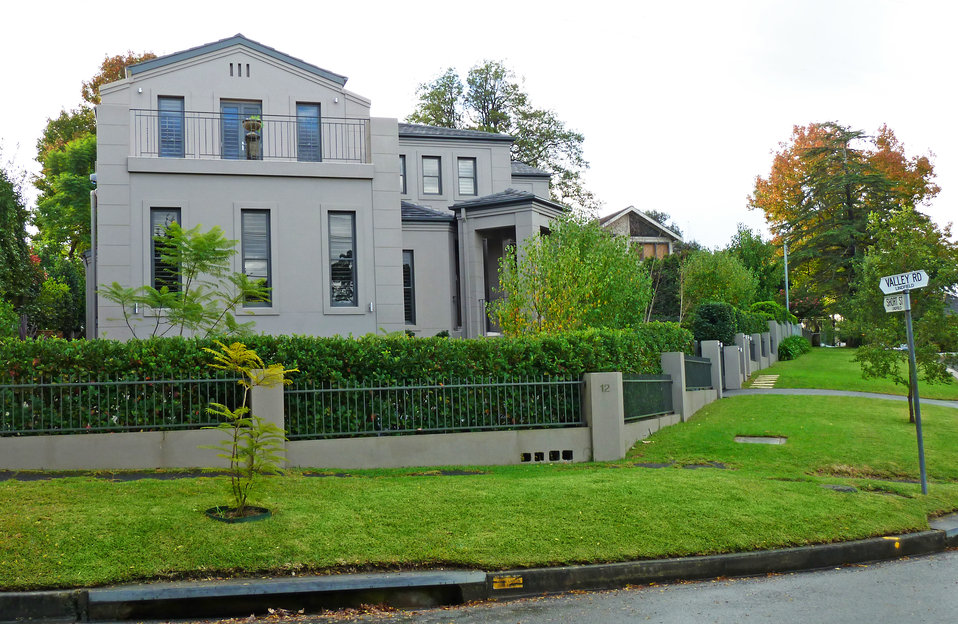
12 Valley Road, Lindfield, New South Wales, Australia.